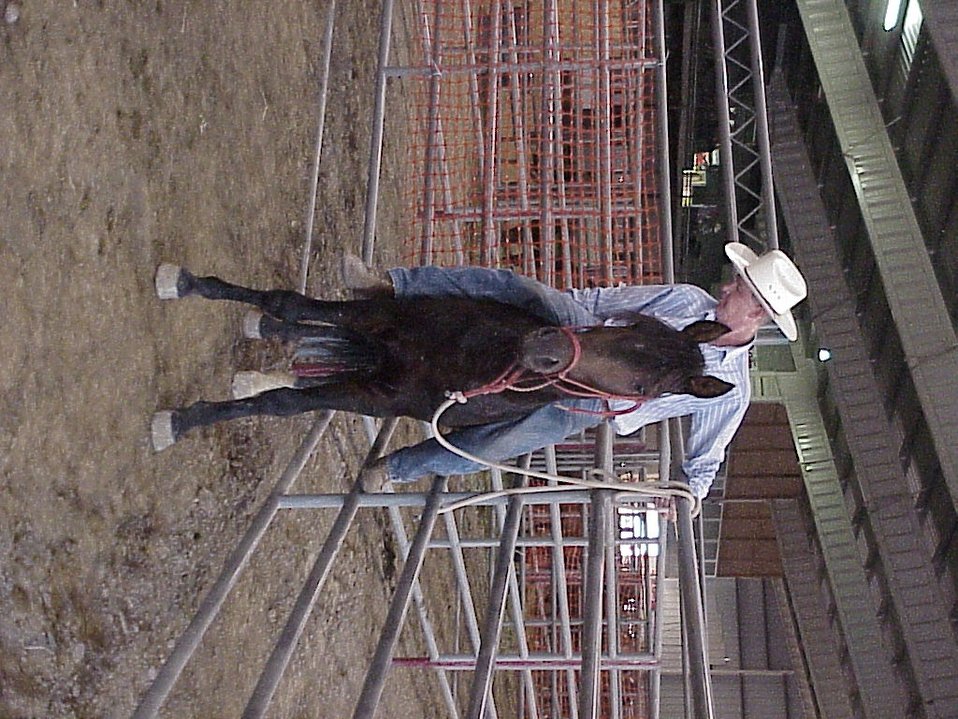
Horse Gentler Mario Johnson Lewiston Wild Horse and Burro Adoption Program Auction WHB indoor auction Cottonwood Field Office UCSC Upper Columbia Salmon Clearwater District